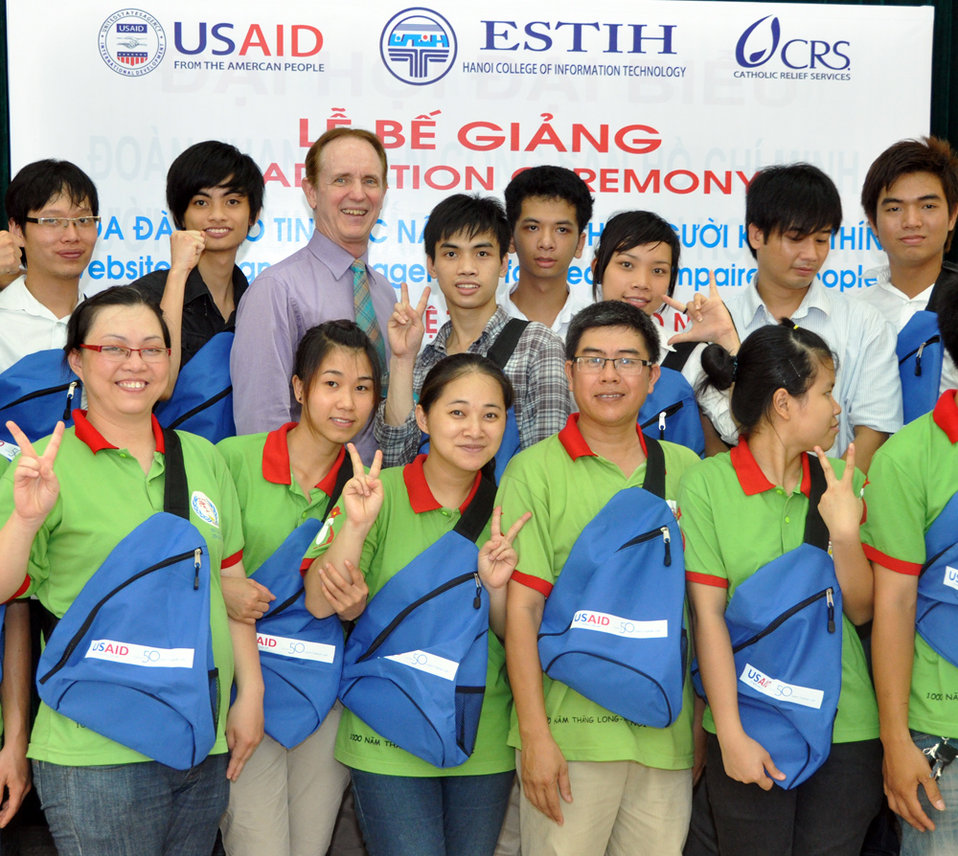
Hearing Impaired Student Graduation in Hanoi, with USAID 50th anniversary bags